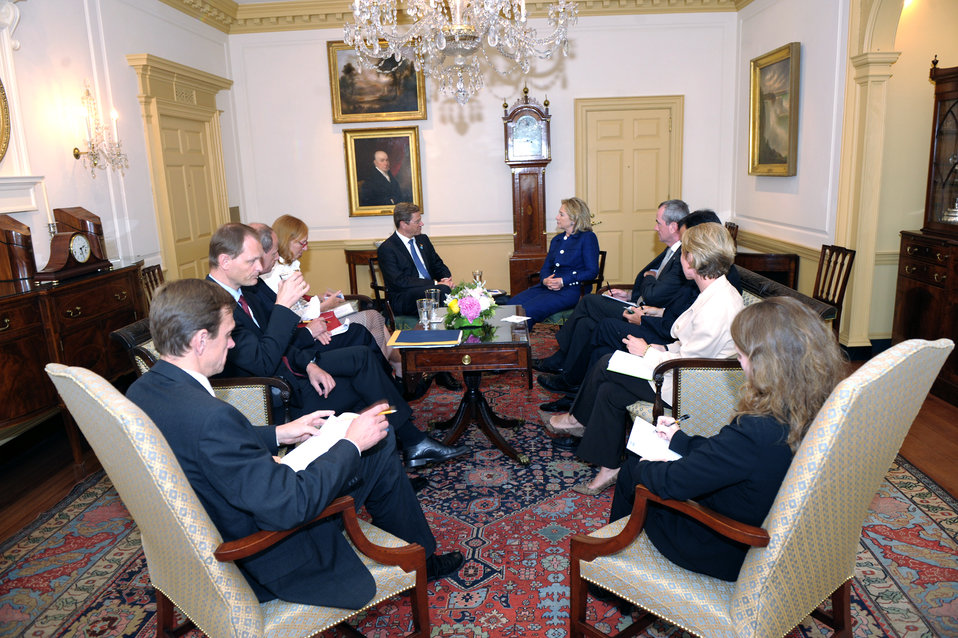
Secretary Clinton Meets With German Foreign Minister Westerwelle

U.S. Secretary of State Hillary Rodham Clinton holds a bilateral meeting with German Foreign Minister Guido Westerwelle, at the U.S. Department of State in Washington, D.C., on June 7, 2011.